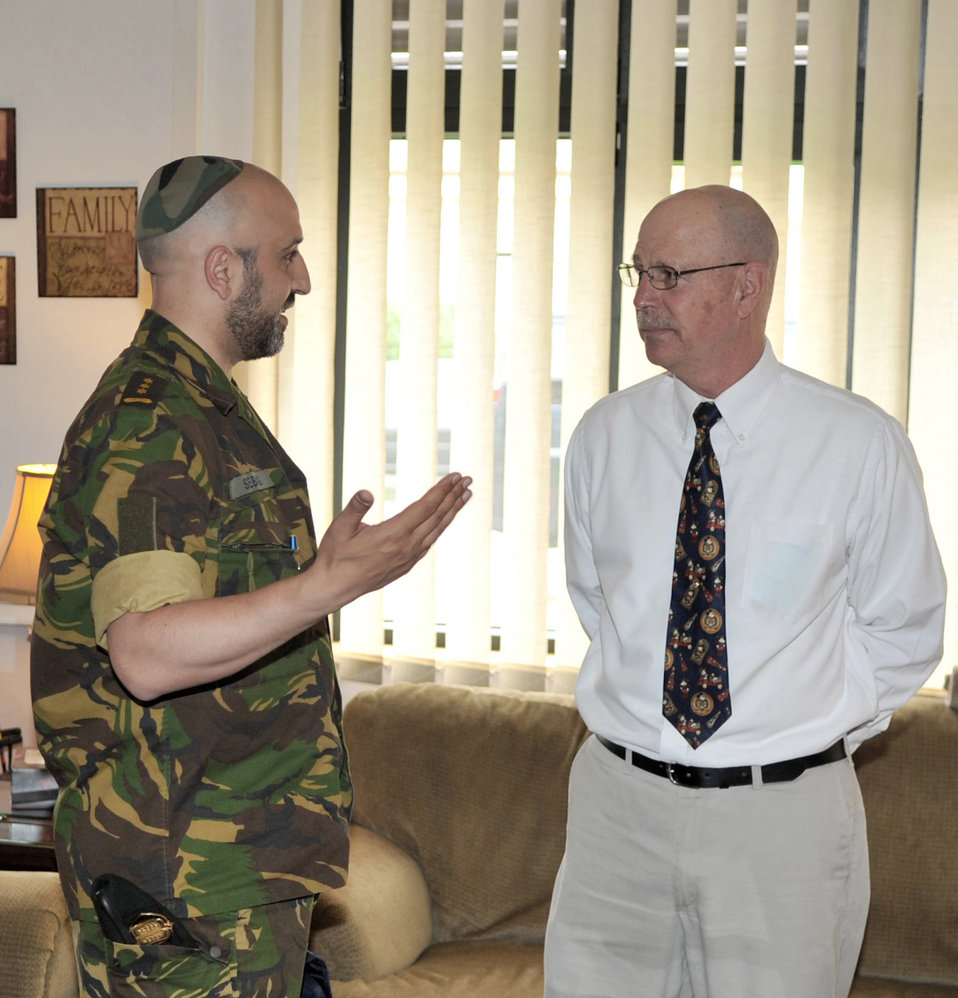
NATO AAFCCC 2011

Col. (Rabbi) Menachem Sebbag (left), the Netherlands armed forces chief of Jewish chaplains, speaks with Rick Deppe, the Airmen Ministries coordinator for Club 7, during the NATO Allied Air Force Chaplains Consultative Committee Conference at Ramstein Air Base, Germany, June 16, 2011.